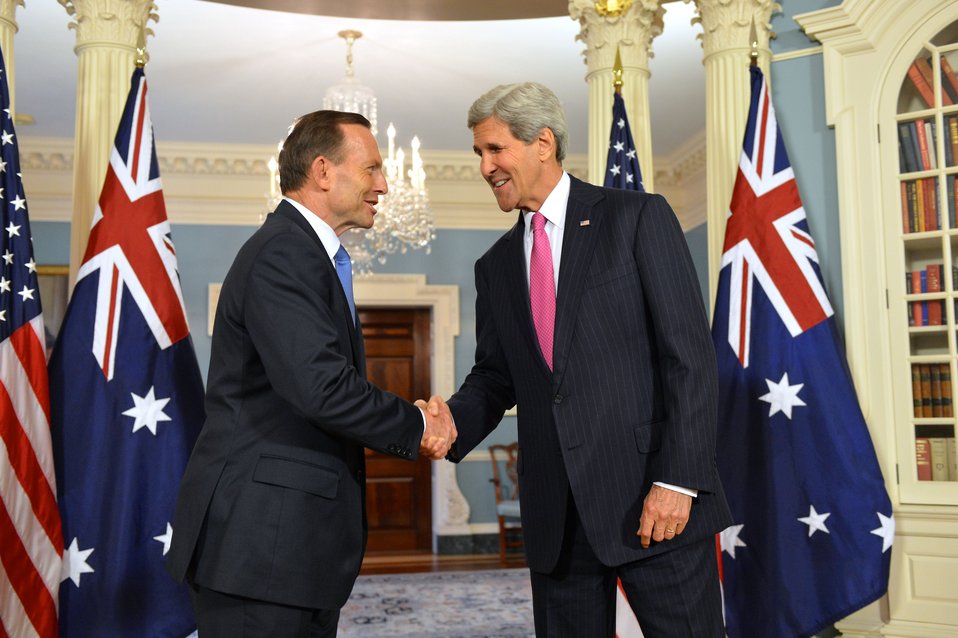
Secretary Kerry Shakes Hands With Australian Prime Minister Abbott

U.S. Secretary of State John Kerry shakes hands with Australian Prime Minister Tony Abbott after they addressed reporters at the U.S. Department of State in Washington, D.C., on June 12, 2014.